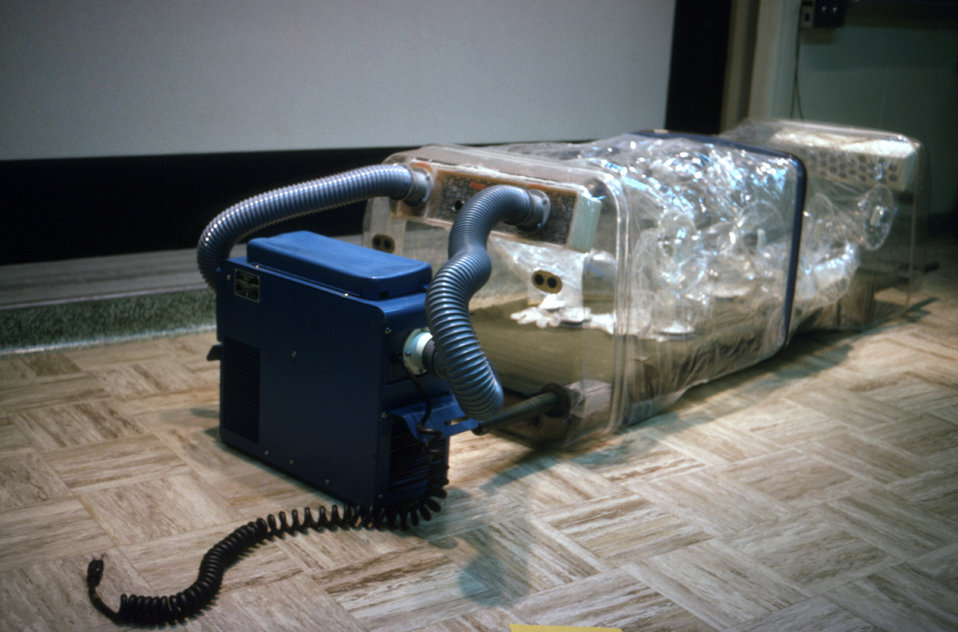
This Bed Isolator, produced by Vickers Medical Ltd., was on display in 1977 at the CDC.